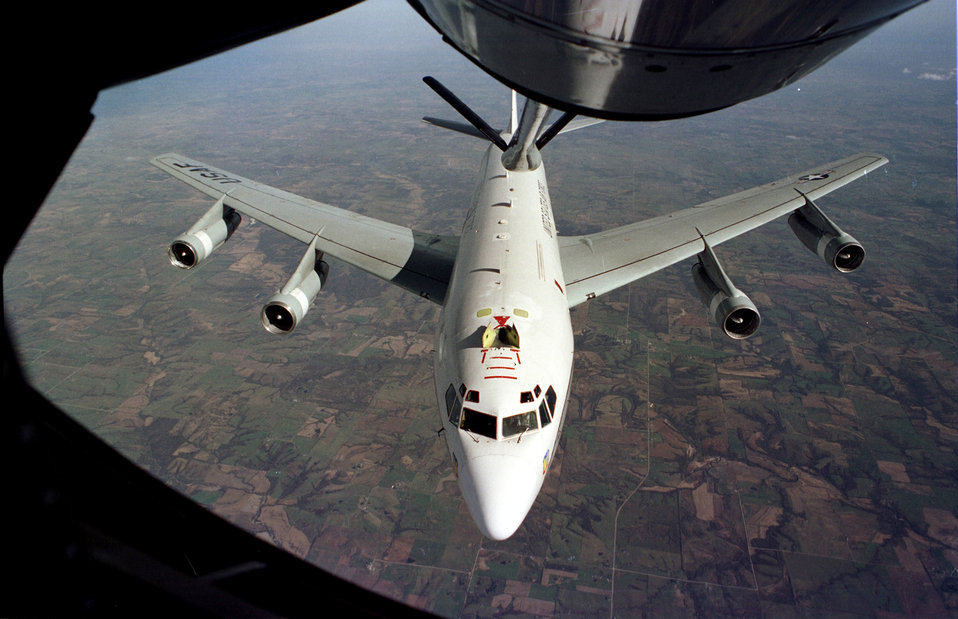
WC-135 W

FILE PHOTO -- The WC-135W Constant Phoenix aircraft collects particulate and gaseous debris from the accessible regions of the atmosphere in support of the Limited Nuclear Test Ban Treaty of 1963.